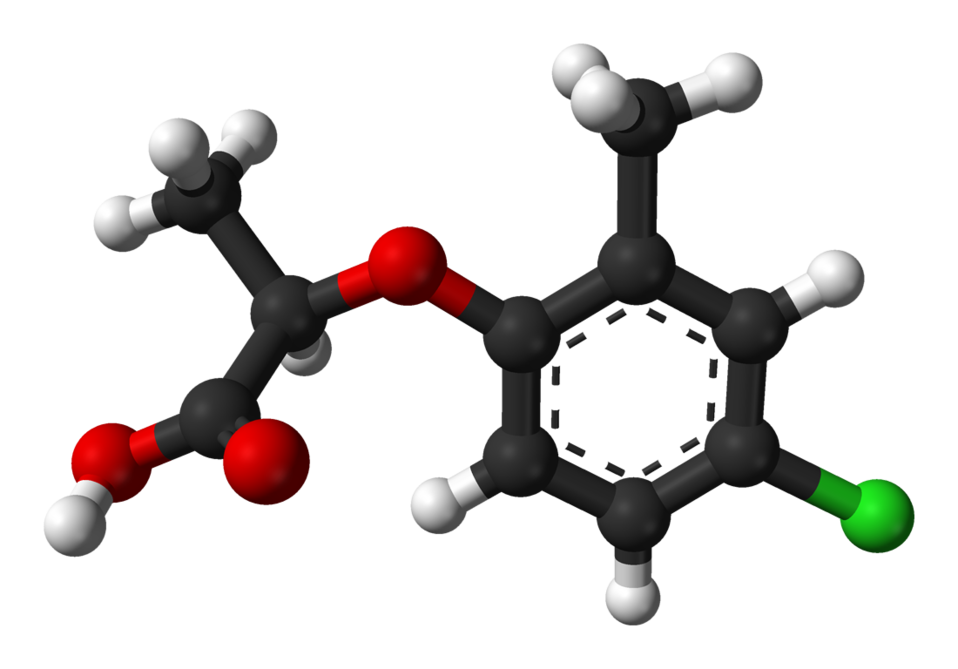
Ball-and-stick model of the (R)-( )-mecoprop molecule, as found in the crystalline state. X-ray crystallographic data from G. Smith, C. H. L. Kennard, A. H. White and P. G. Hodgson (April 1980). '( -)-2-(4-Chloro-2-methylphenoxy)propionic acid (mecoprop)'. Acta Cryst. B36 (4): 992-994. DOI:10.1107/S0567740880005134.. Model constructed in CrystalMaker 8.1. Image generated in Accelrys DS Visualizer.